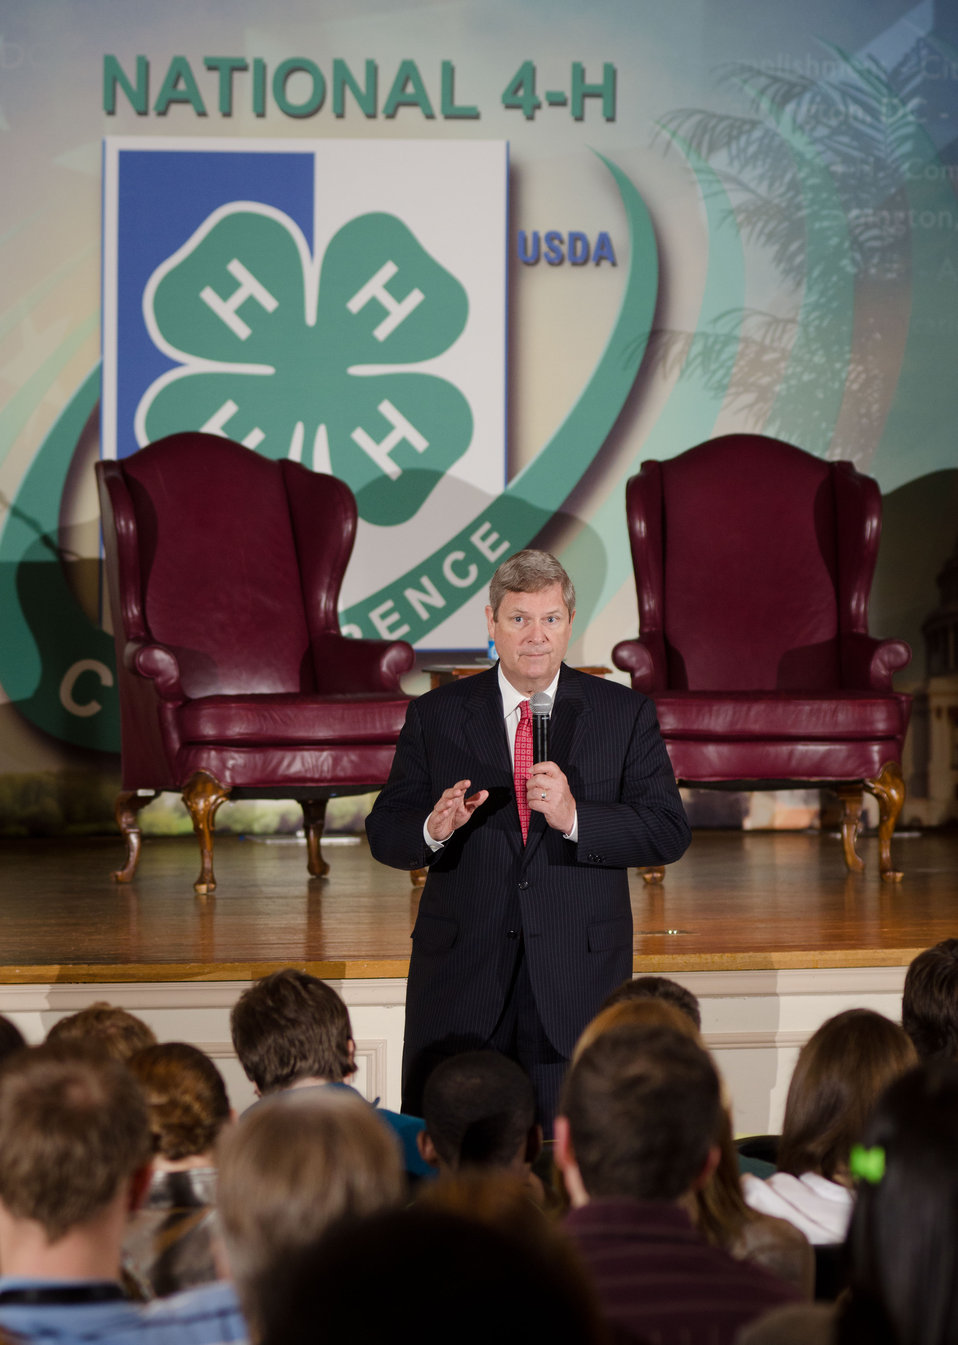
Agriculture Secretary Tom Vilsack speaks with 4-H members at the National 4-H Youth Center in Chevy Chase, MD, on Monday, March 26, 2012. 'For almost 100 years, USDA and 4-H have partnered to produce some of our nation's best and brightest, including farmers and ranchers who have supported the American economy and put food on our tables,' Vilsack said. 'You all are tomorrow's leaders. We need you to think big, innovate and help tackle the important challenges standing between us, a stronger middle class and a stronger nation.'